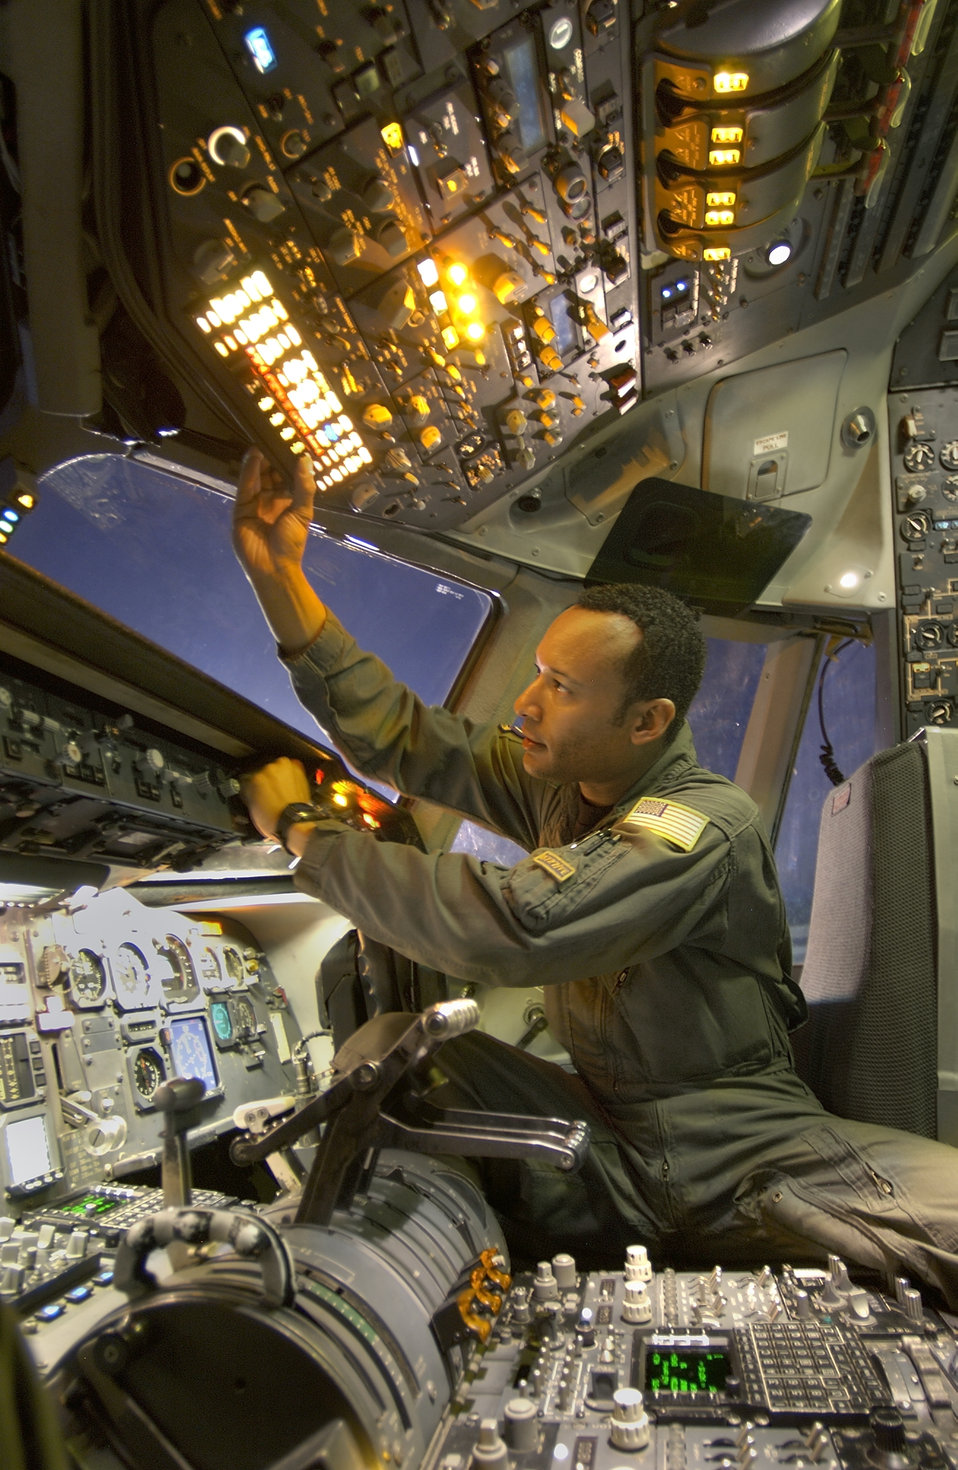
Extending the mission

TRAVIS AIR FORCE BASE, Calif. -- Staff Sgt. Talbert Reese performs preflight checks on a KC-10A Extender. Sergeant Reese is a flight engineer with the 9th Air Refueling Squadron here.